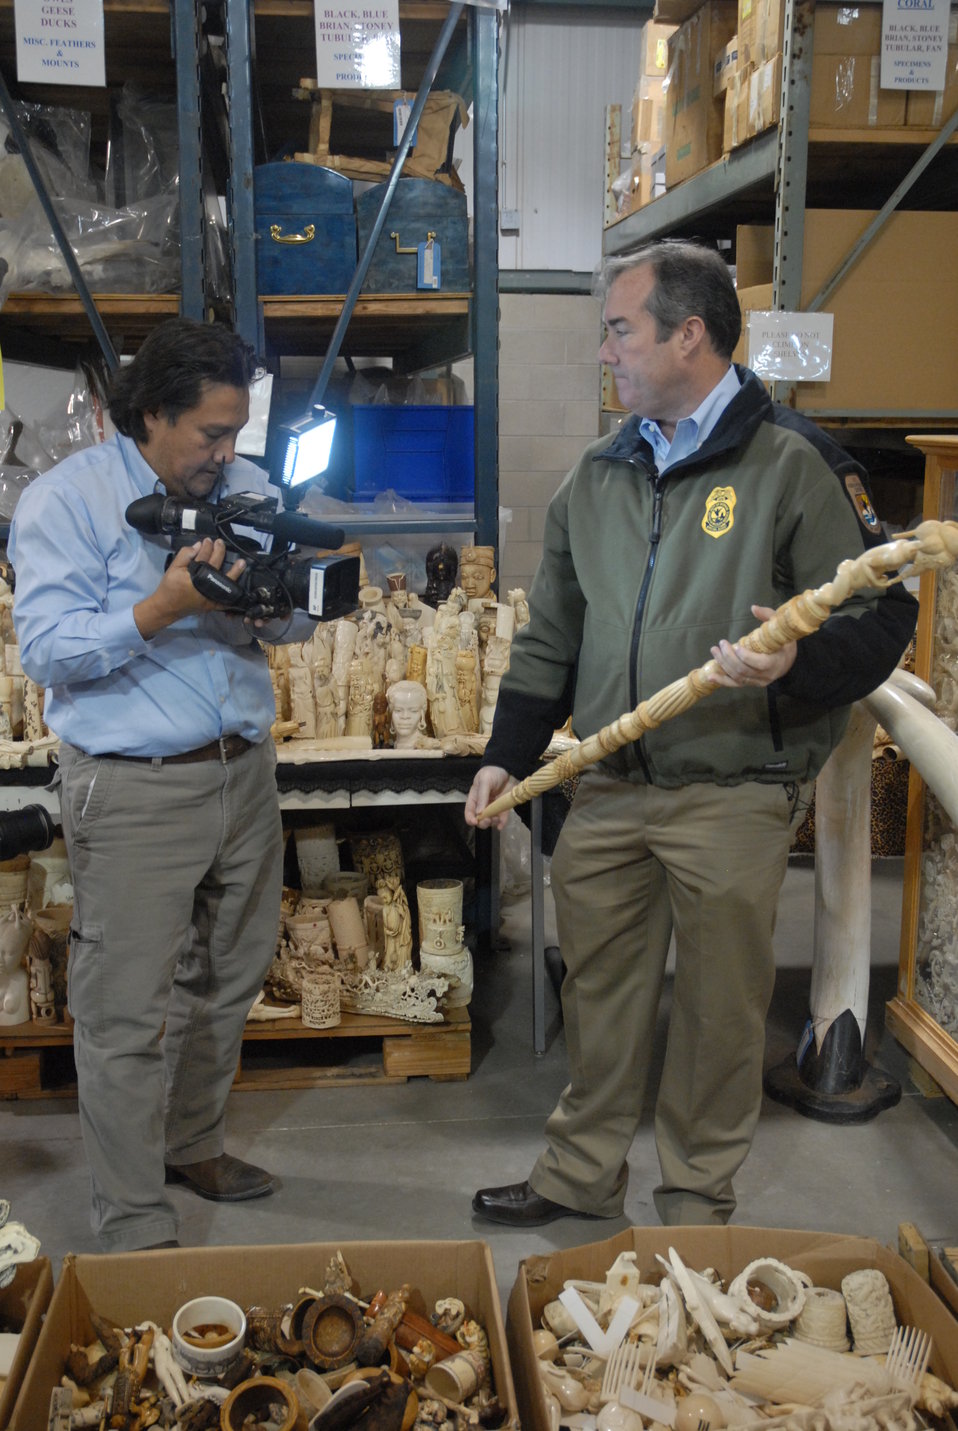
Edward Grace, USFWS Deputy Assistant Director for Law Enforcement discussing the ivory.